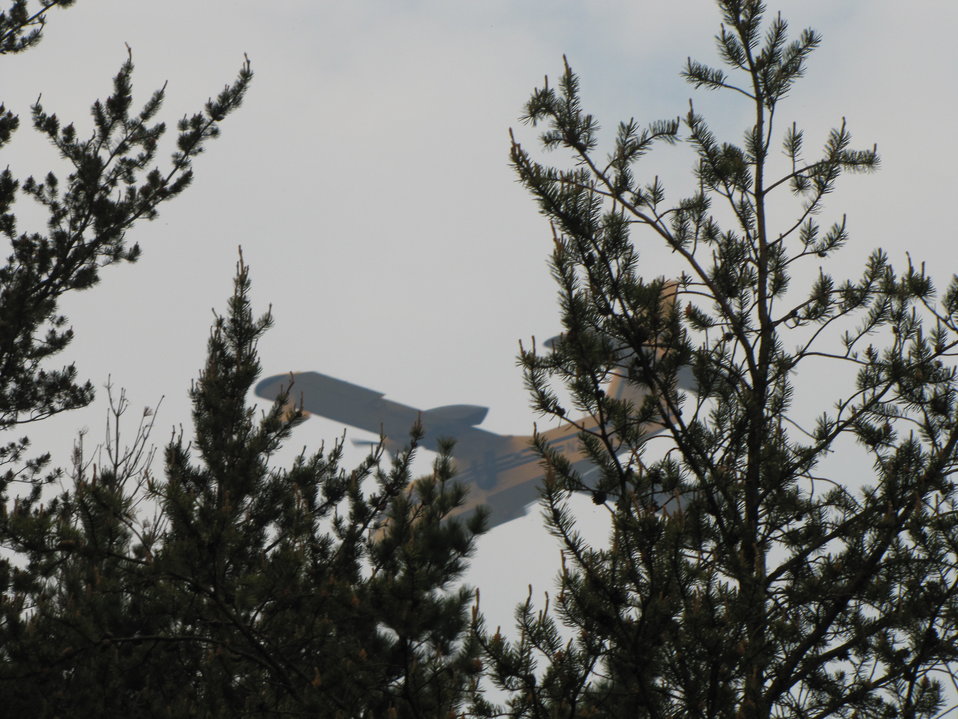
Scoop Ship Airplane Close up

A scoop ship airplane. These planes have been filling with water on Big Manistique Lake and then dropping it on the fire.